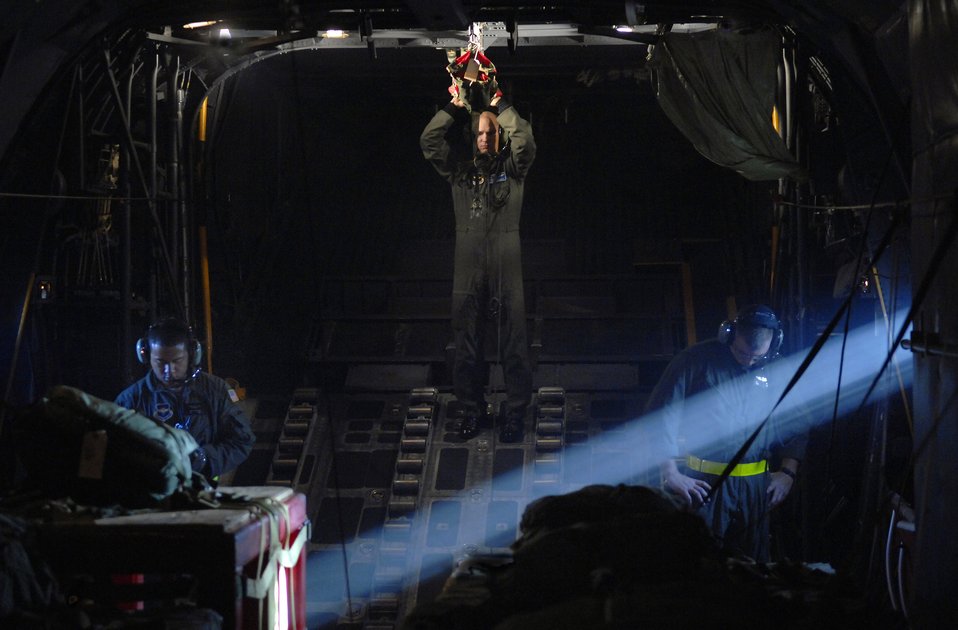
First day of school

Tech. Sgt. Brian Beaty (center) observes as Airman 1st Class Ivory Feaster III (left) goes over his checklist and Pfc. J.L. Tiffin takes a moment to gather his thoughts while on a C-130 Hercules training flight Oct. 31. Sergeant Beaty is an instructor and Airman Feaster and Private Tiffin are students.